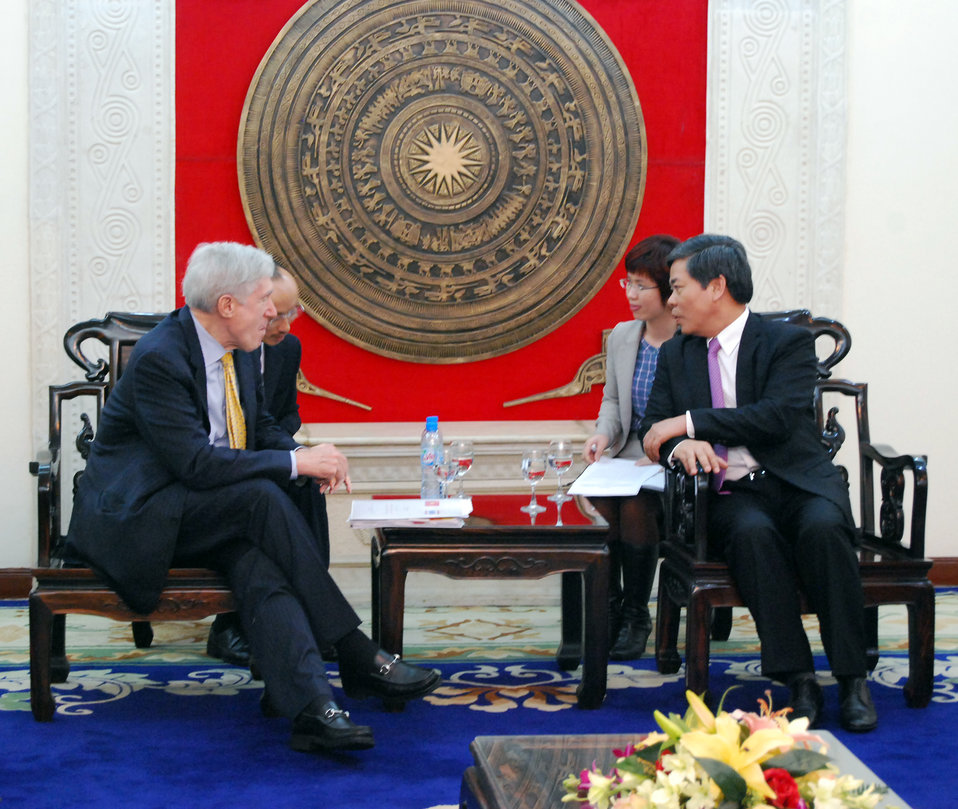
U.S.-Vietnam MOU on Low Emissions Development Strategies Signing Ceremony